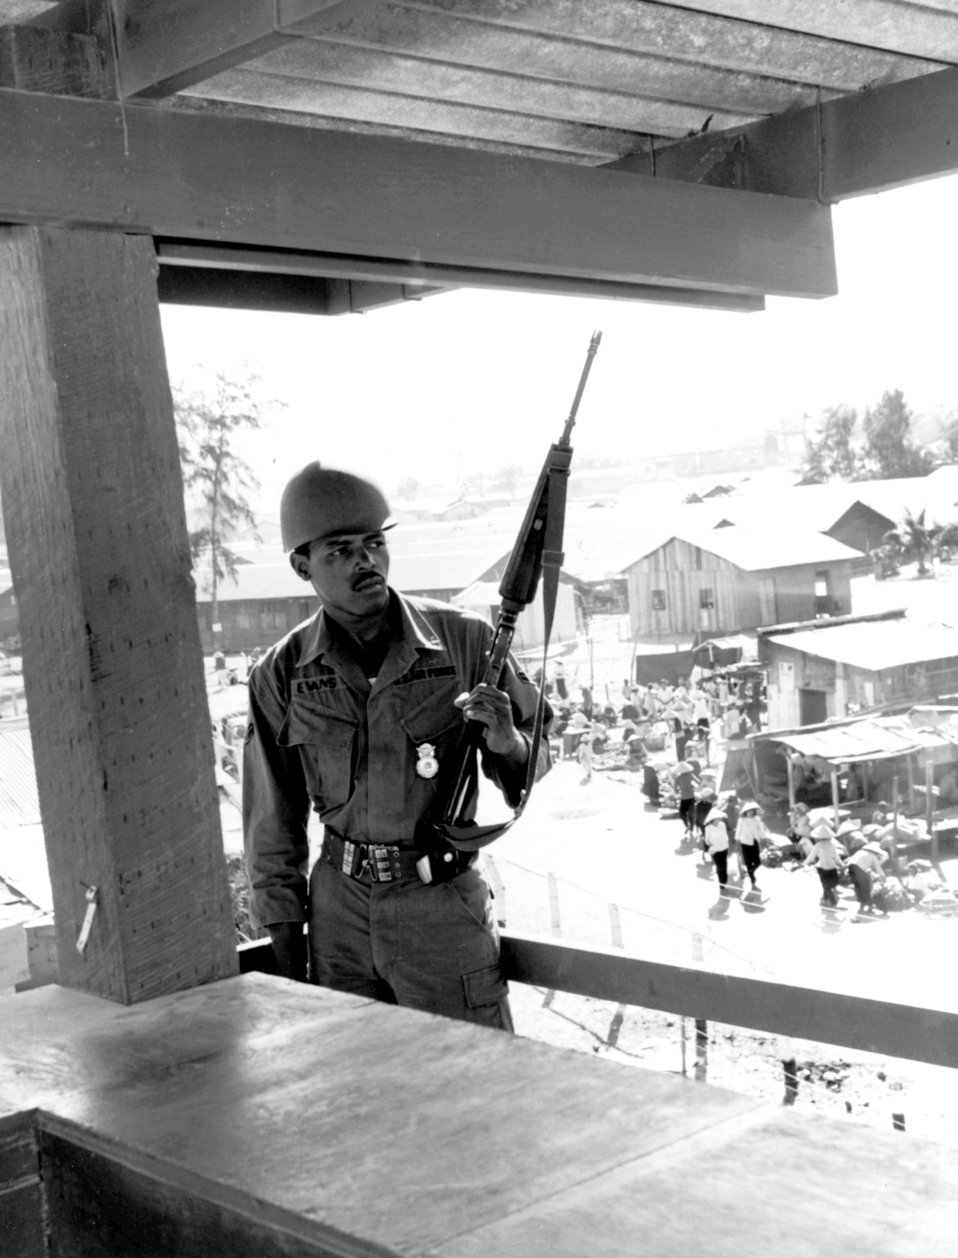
Airman stands guard

1960s -- Airman 1st Class Lonnie J. Evans, Jr., of Philadelphia, stands guard on top one of the sentry towers posted along the perimeter at Nha Trang Air Base, South Vietnam, in December 1967.